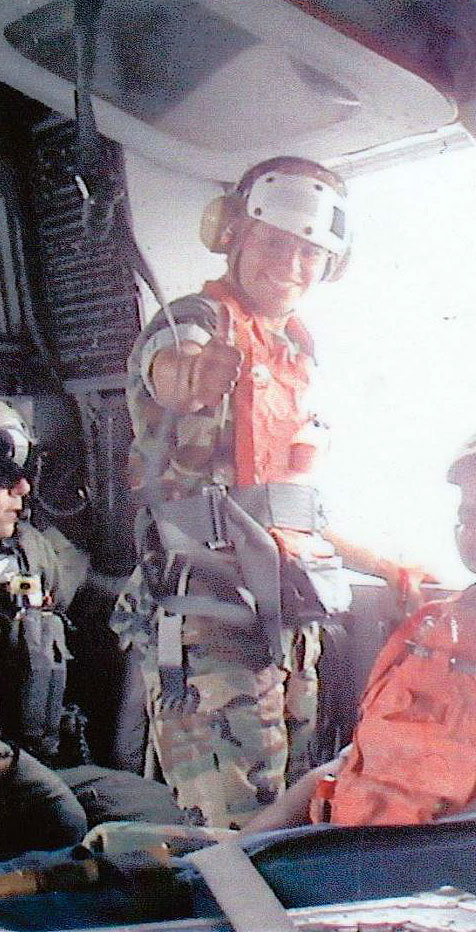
Jason Mercado served with the Marines and is now with the R3 Migratory Bird Permits office.